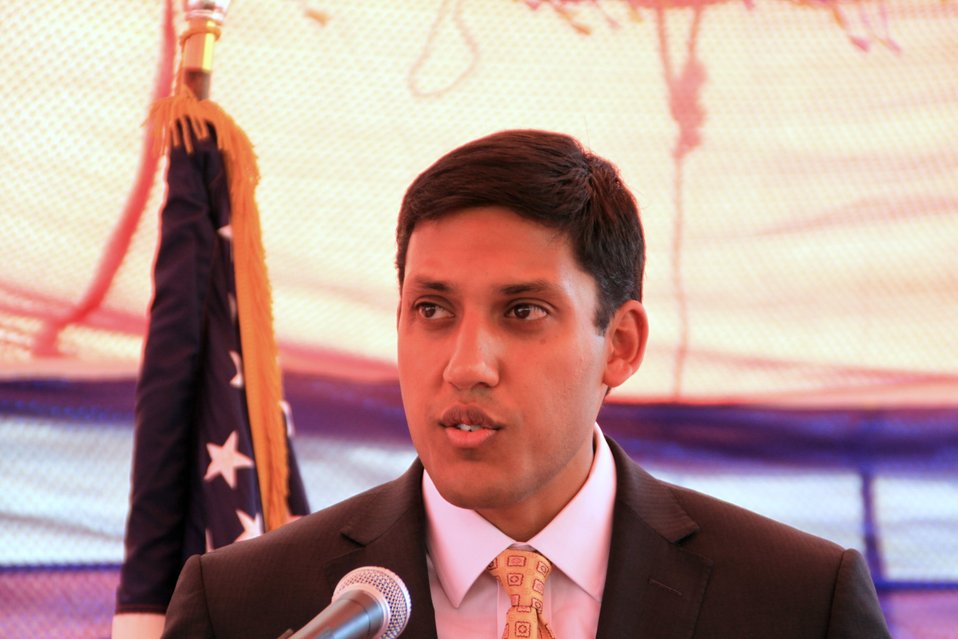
Badam Bagh Farm